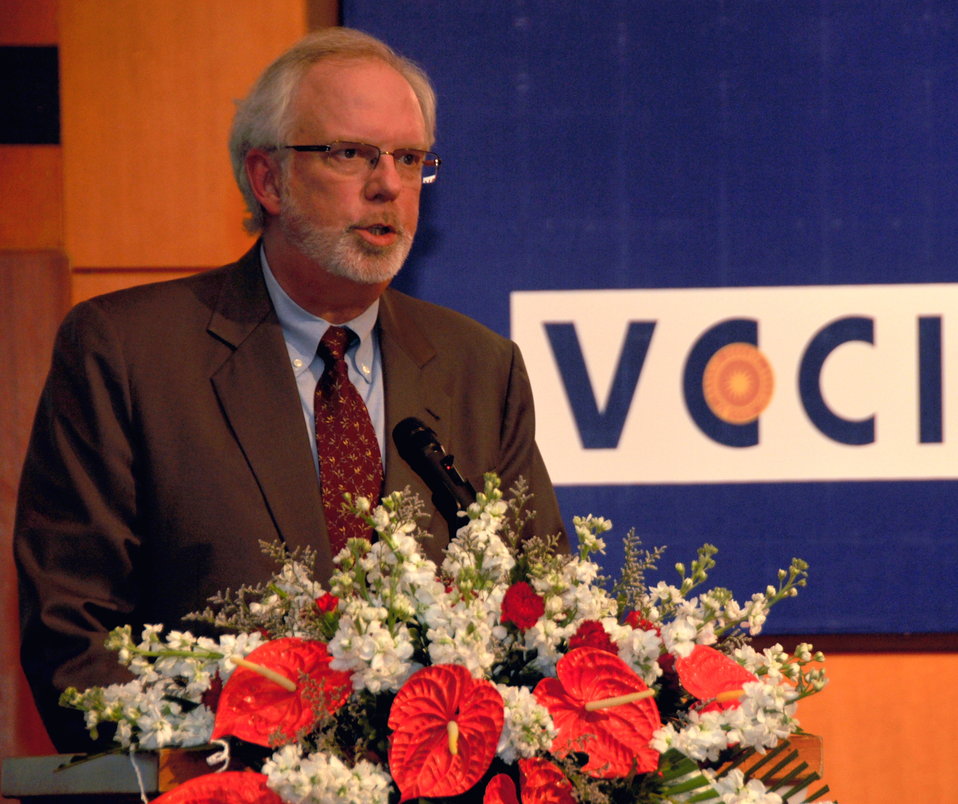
U.S. Ambassador David Shear speaks at Disabilities Program Launch

Hanoi, April 17, 2013